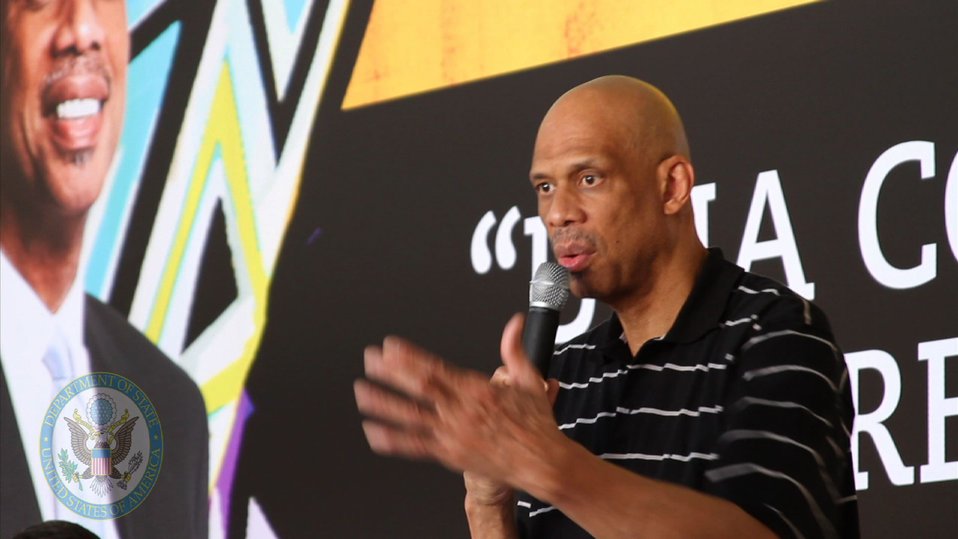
Cultural Ambassador Kareem Abdul-Jabbar Engages Youth

Hall-of-Famer and Global Cultural Ambassador for the U.S. Department of State Kareem Abdul-Jabbar engages youth in Salvador, Brazil, on January 24, 2012.